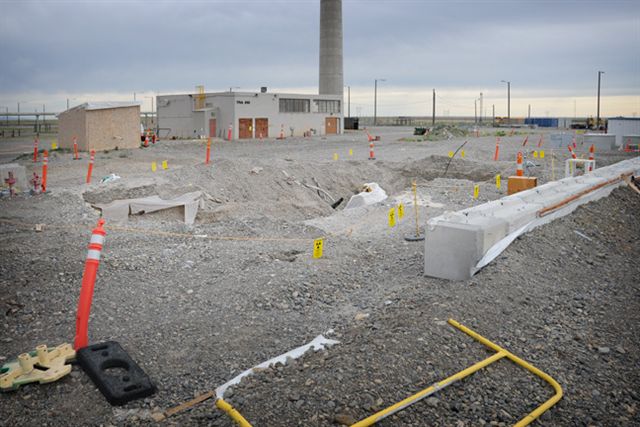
RAN DD RTC S77 TRA-613 PROGRESS 072610 P6555-16 A